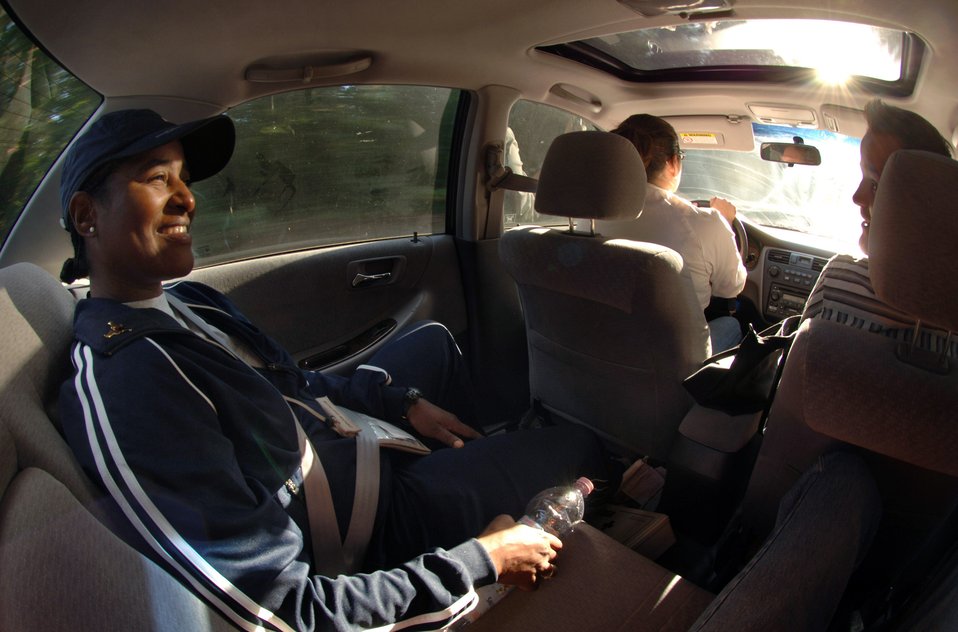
Volunteer organization lifts spirits of wounded veterans

Second Lt. Mary Kuconis drives Chief Master Sgt. Sandy Ware (left) and Army Sgt. Jason Von to a local American-owned restaurant in Kaiserslautern that feeds wounded servicemembers for free on Tuesday nights. Chief Ware and Sergeant Von are outpatients at the Landstuhl Regional Medical Center and recently returned from deployments in support of Operation Enduring Freedom and Operation Iraqi Freedom. Lieutenant Kuconis is a member of a chartered non-profit volunteer organization known as